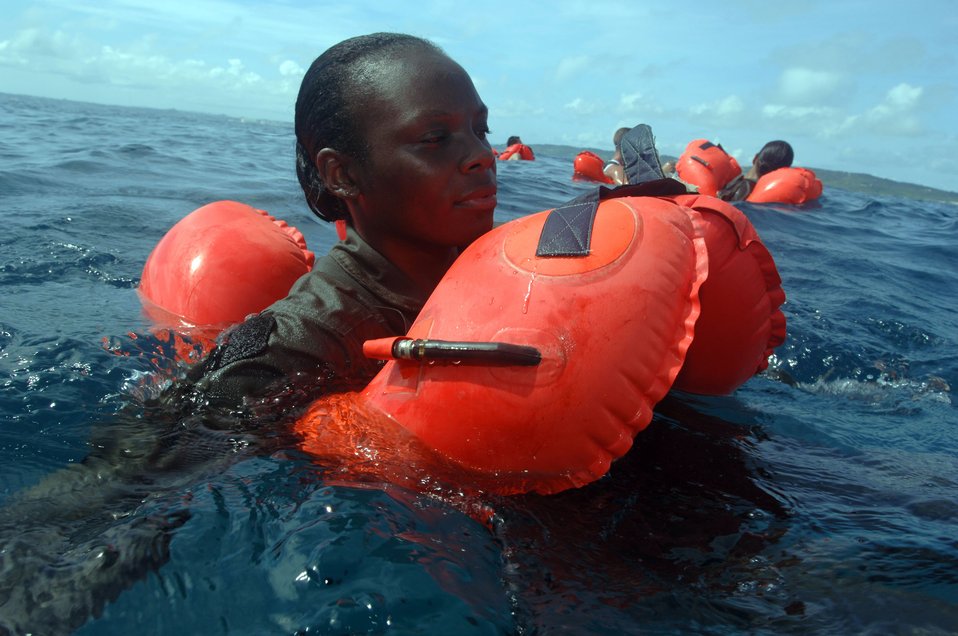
Rescue me

KADENA AIR BASE, Japan -- Tech. Sgt. Dawn Ryan waits to be